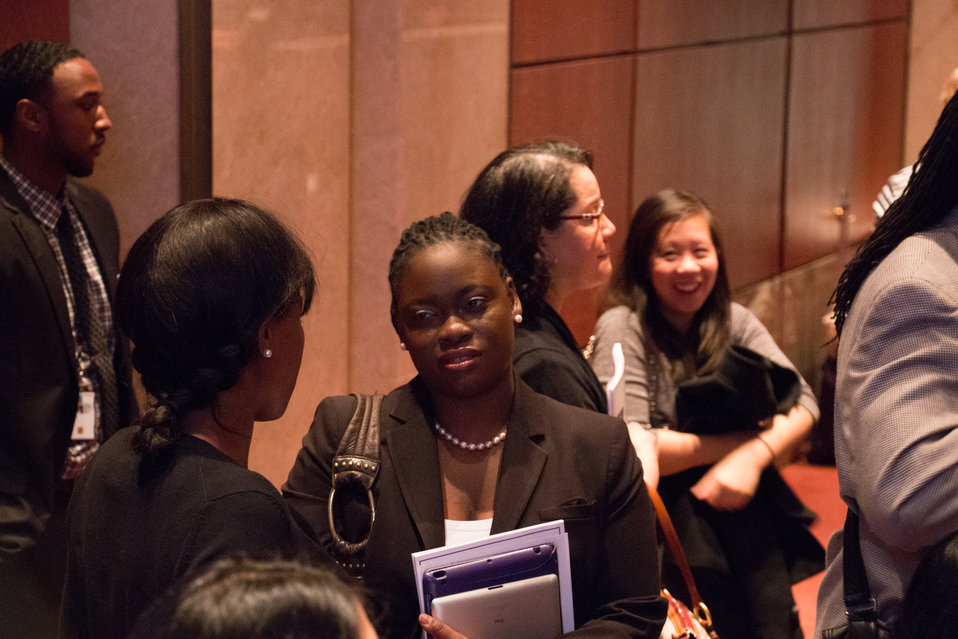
VHAP Launch (364 of 511)